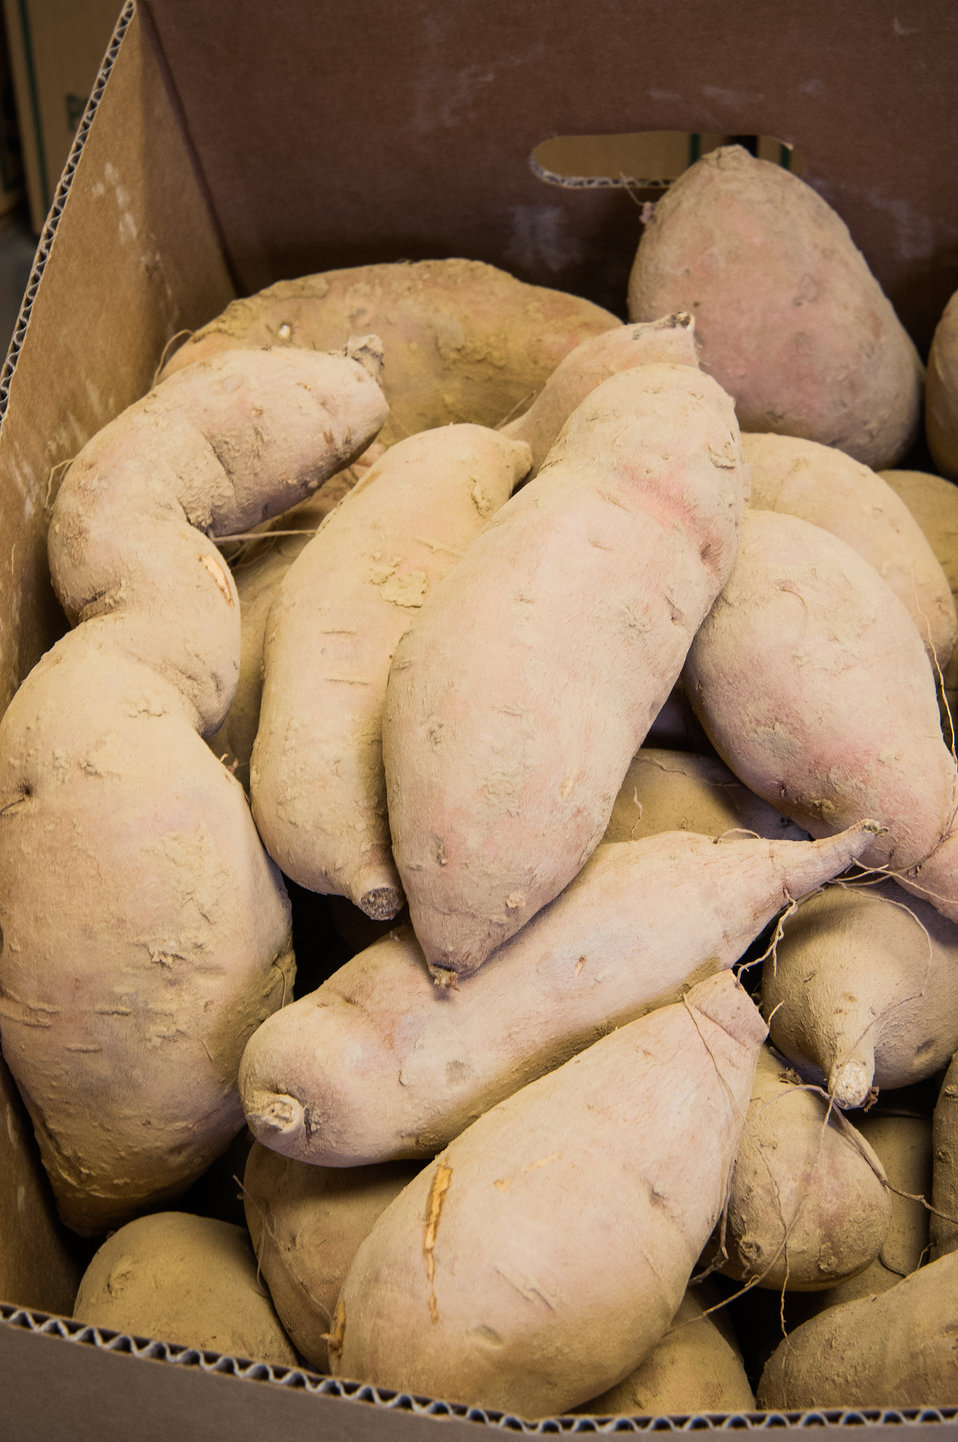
Beauregard sweet potatoes packaged at the University of Arkansas at Pine Bluff, Agriculture Demonstration Outreach Center in Marianna, AR on Mar. 5, 2013. The Arkansas Delta Seeds of Change (ADSOC) was able to purchase production equipment with a U.S. Department of Agriculture (USDA) Rural Development (RD) Rural Business Enterprise Grant (RBEG). USDA in partnership Heifer International (an International organization whose mission is to work with communities to end hunger and poverty and care for the Earth) and various for-profit and non-profit organizations have put in motion the “Seeds of Change Implementation Plan” to use sustainable agriculture to build food systems in the Arkansas Delta. The program has evolved into the ADSOC Initiative. The ADSOC Initiative assists producers with technical assistance for crop production, management, harvesting, food security, value added products and marketing options and provides access to specialized production and marketing equipment.